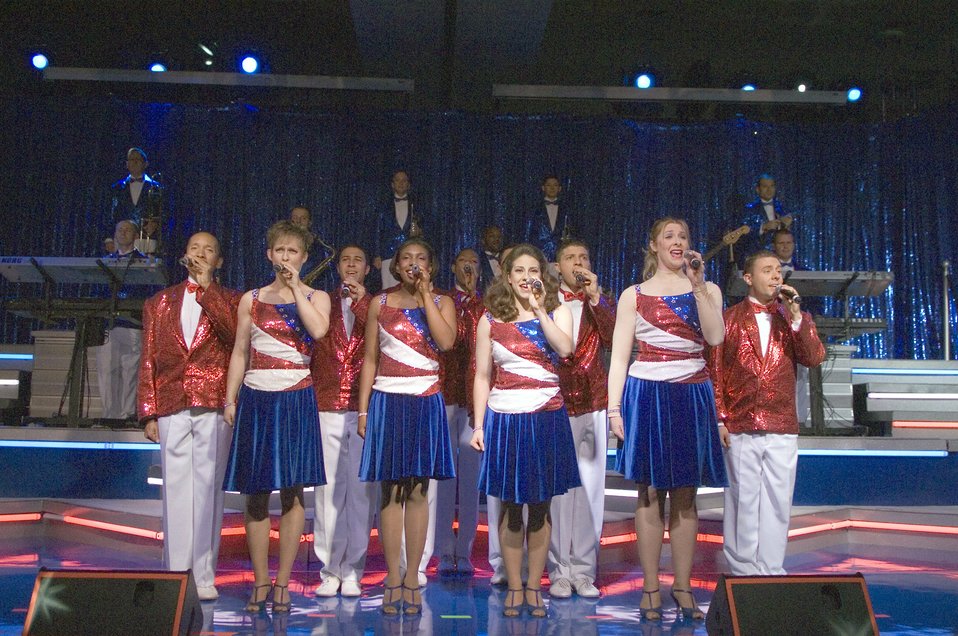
Airmen named the 'Best of the Best'

The 2007 Tops in Blue team perform their show for the Tops in Blue Worldwide Talent contestants in the collocated club on Lackland Air Force Base, Texas, Dec. 10. The contestants are competing to be the new 2008 Tops in Blue performers.